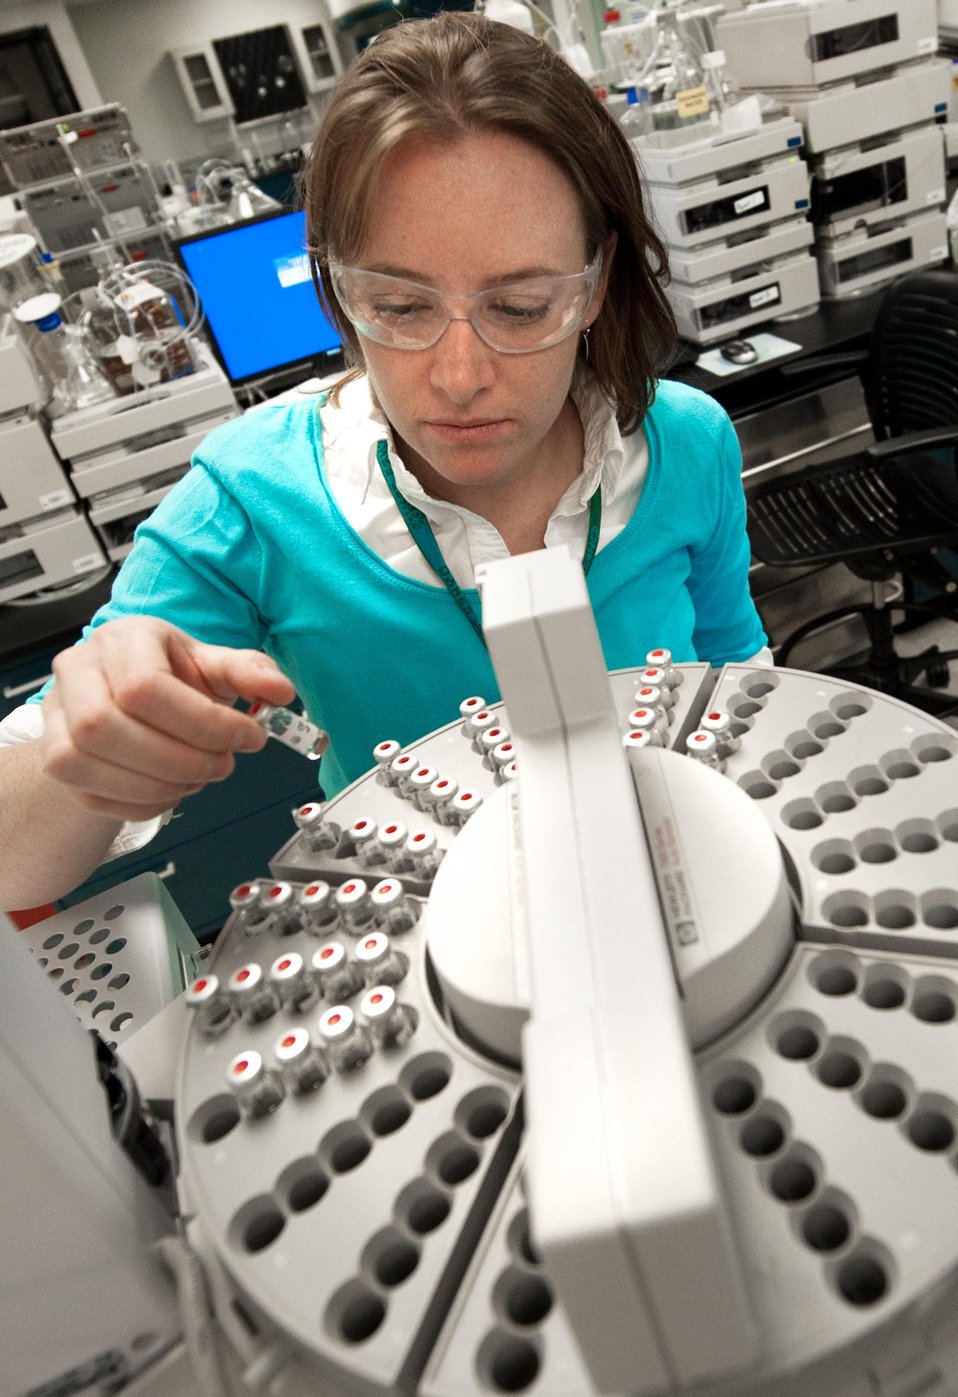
AT NREL, A RESEARCHER SORT TEST TUBES SAMPLES WITH YELLOW AND GREEN ALGAE.

The researcher helps NREL create innovated ways to measure the oil content of algae strains.